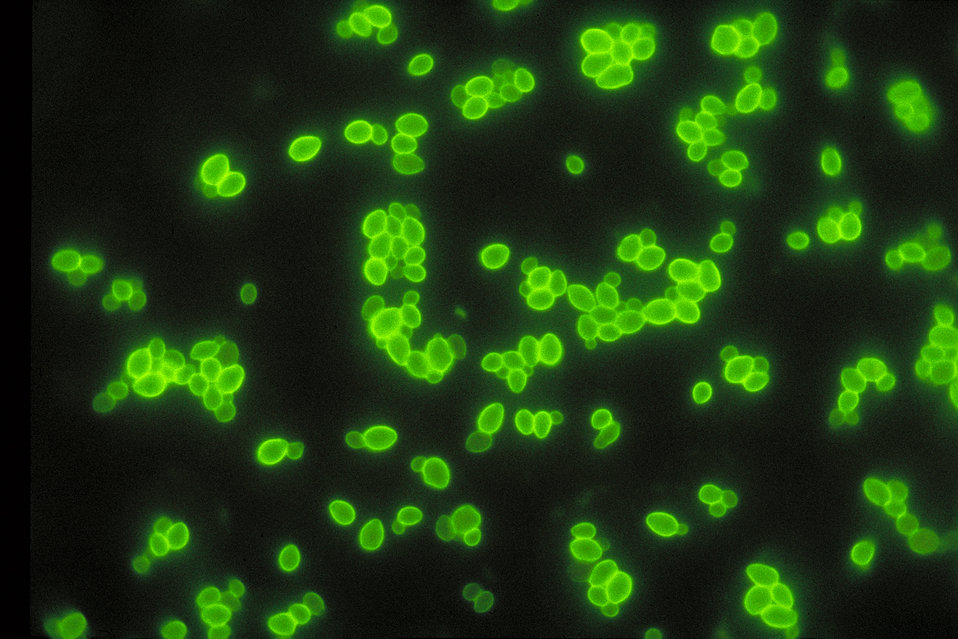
This fluorescent antibody (FA) stain revealed the oval budding yeast cells of Candida albicans fungal organisms.